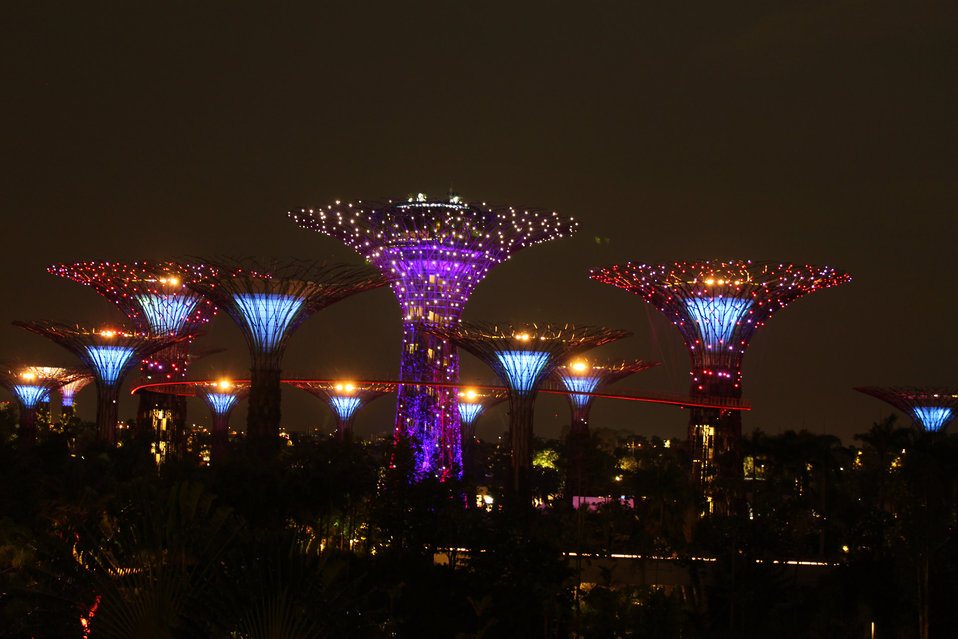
Garden by the bay night view trees.